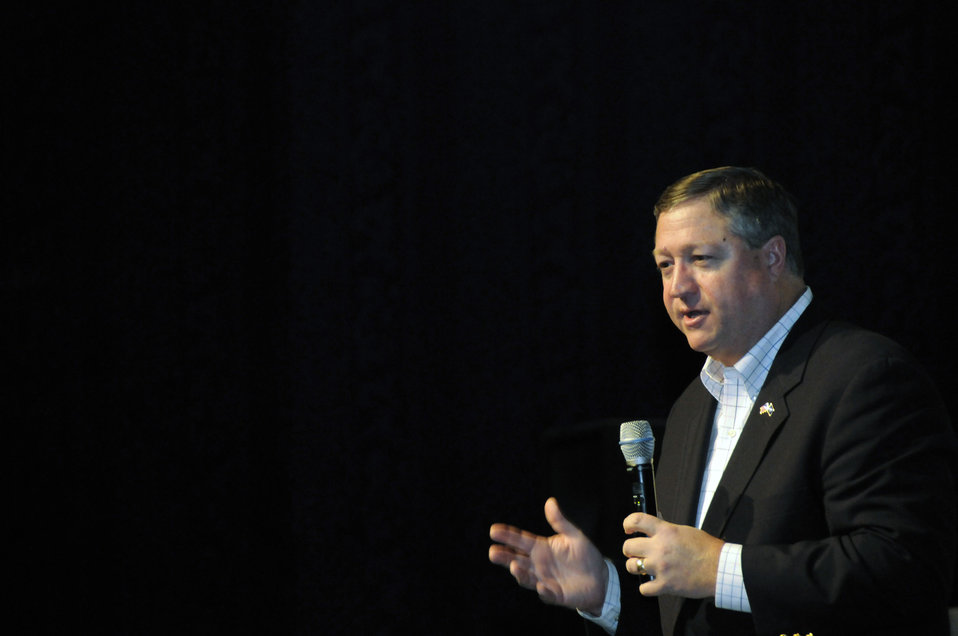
Secretary visits Airmen in Southwest Asia

Secretary of the Air Force Michael B. Donley addresses an Airmen's call audience during his visit to the 379th Air Expeditionary Wing Oct. 11 at an air base in Southwest Asia. The secretary described his vision ahead for the Air Force, the challenges faced and the plan to move the Air Force into the future.